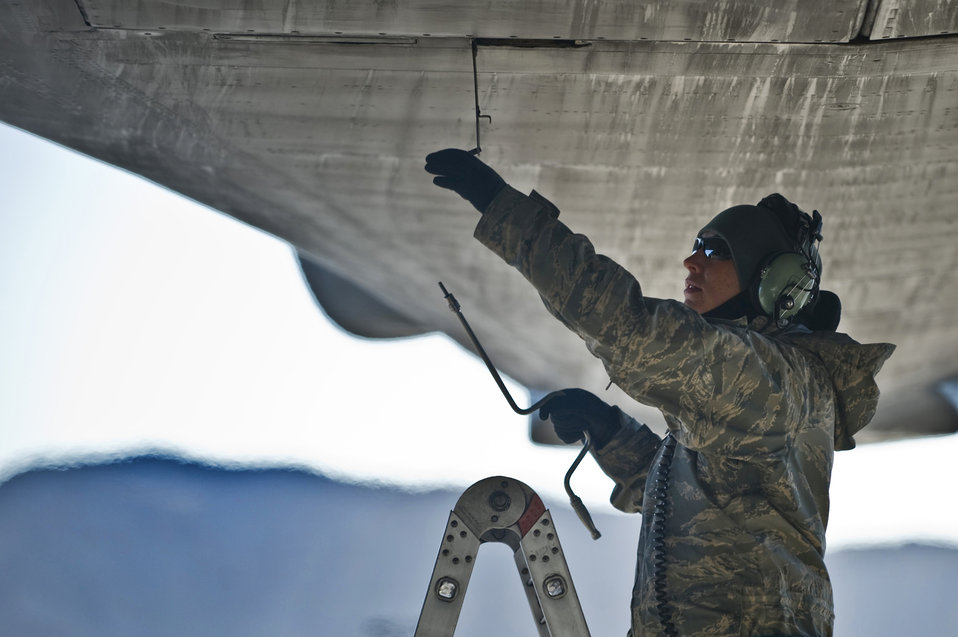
Good to go

Staff Sgt. Courtney Helm performs preflight inspections on a B-1 Lancer during the U.S. Air Force Weapons School mission employment exercise Dec. 7, 2011, at Nellis Air Force Base, Nev. Helms is a 7th Aircraft Maintenance Squadron aerospace propulsion craftsman.